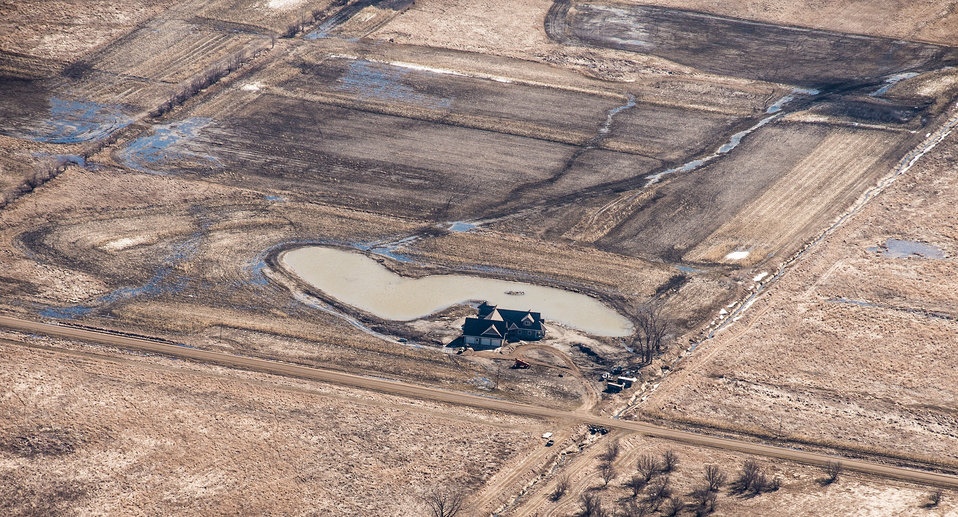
Ehlert North U.S. Department of Agriculture (USDA) Natural Resources Conservation Service (NRCS) Wetland Reserve Program (WRP) in Wilkin County, MN, on Tuesday, April 30, 2013. For information about this and other programs from the USDA Red River Basin Initiative (RRBI) please see www.mn.nrcs.usda.gov/news/features13/RRBI.html.